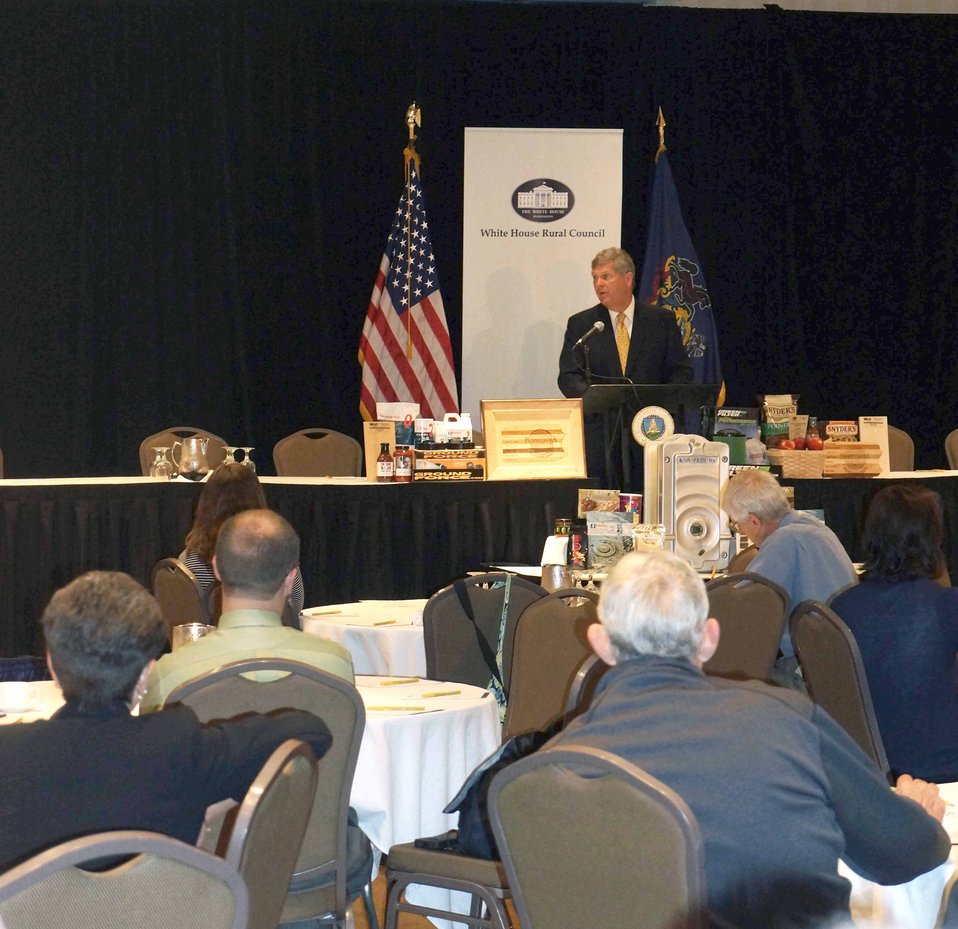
Agriculture Secretary Tom Vilsack makes Keynote Inaugural address at the “Made in Rural America Regional Forum” in Canonsburg, PA on Jun. 4, 2014. Secretary Vilsack explains his concern that the 9.2 million in job growth is not occurring in rural America. He feels that increasing the U.S. export business could help bring jobs back to rural America and keep our young people from leaving for better paying jobs in the city.